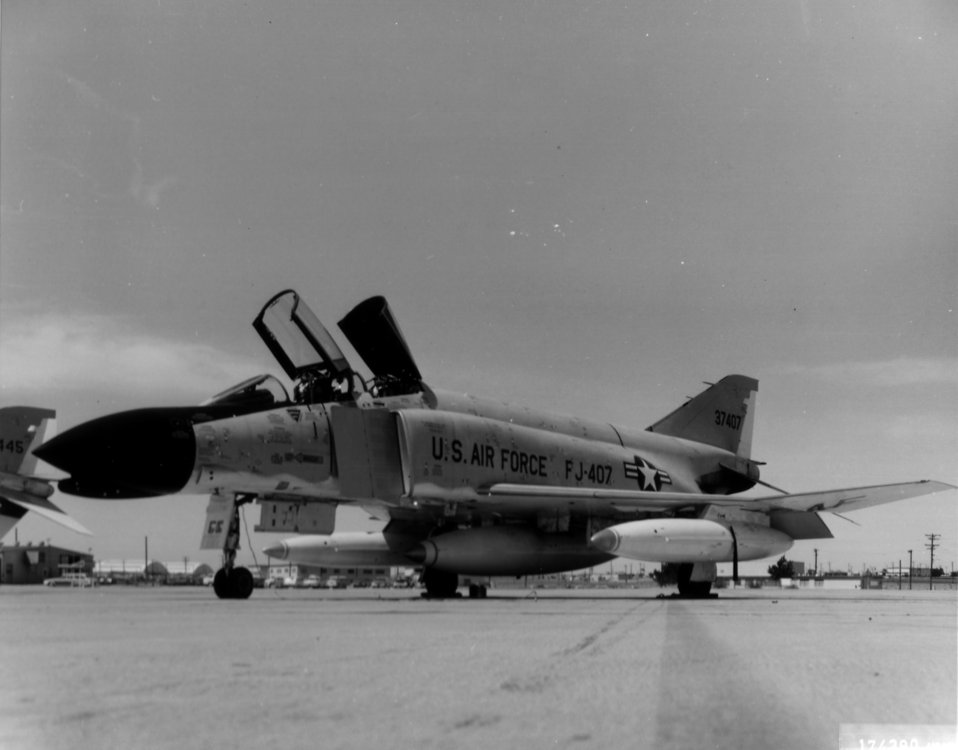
1960's -- F-4 Phantom